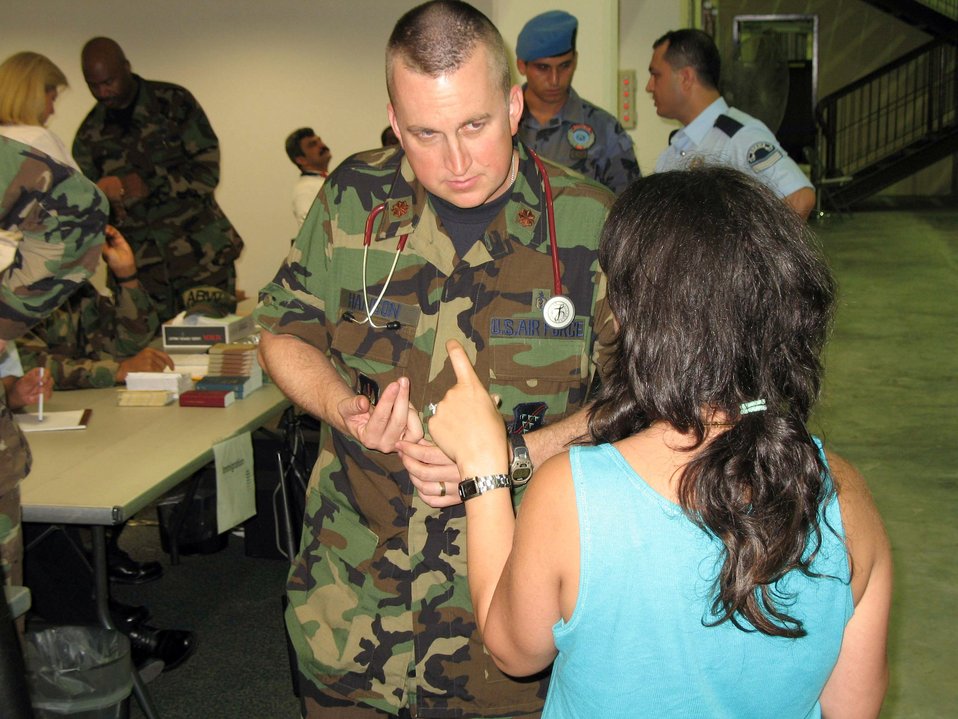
Care and comfort at Incirlik

Maj. Matthew Hanson talks with an American citizen from Lebanon at Incirlik Air Base, Turkey, on July 21. The woman was one of 29 evacuees who arrived at Incirlik that day. Many more are expected over the next few days. Major Hanson is with the 39th Medical Group.